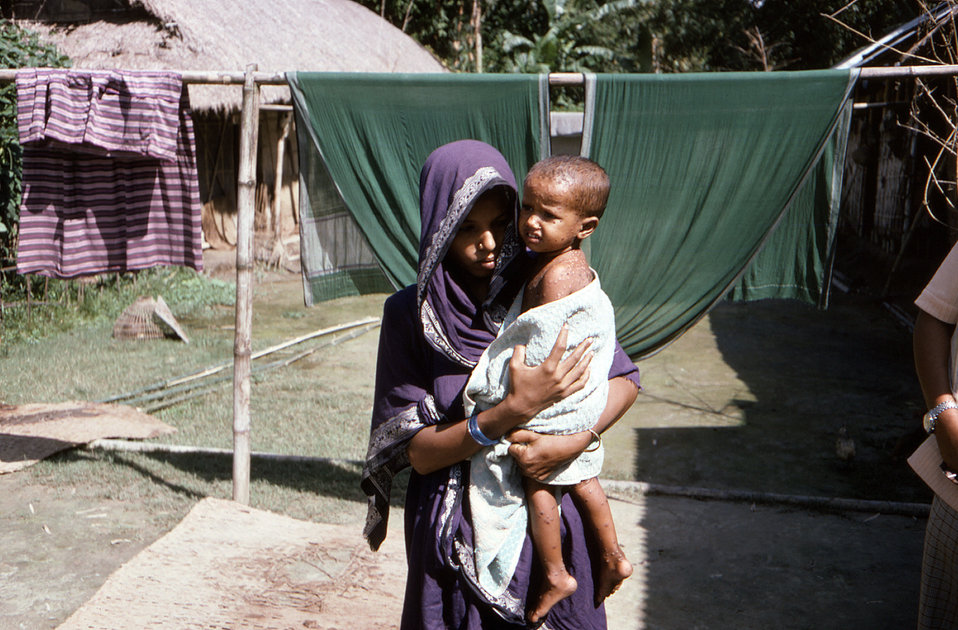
Photographed in the north-eastern Bangladesh District of Sylhet, this young girl was the sister of the boy labeled the 'High Commission Case', pictured in PHIL 12305. At this point, she herself was in the process of recovering from smallpox. See PHIL 12307, for another view of this young patient.